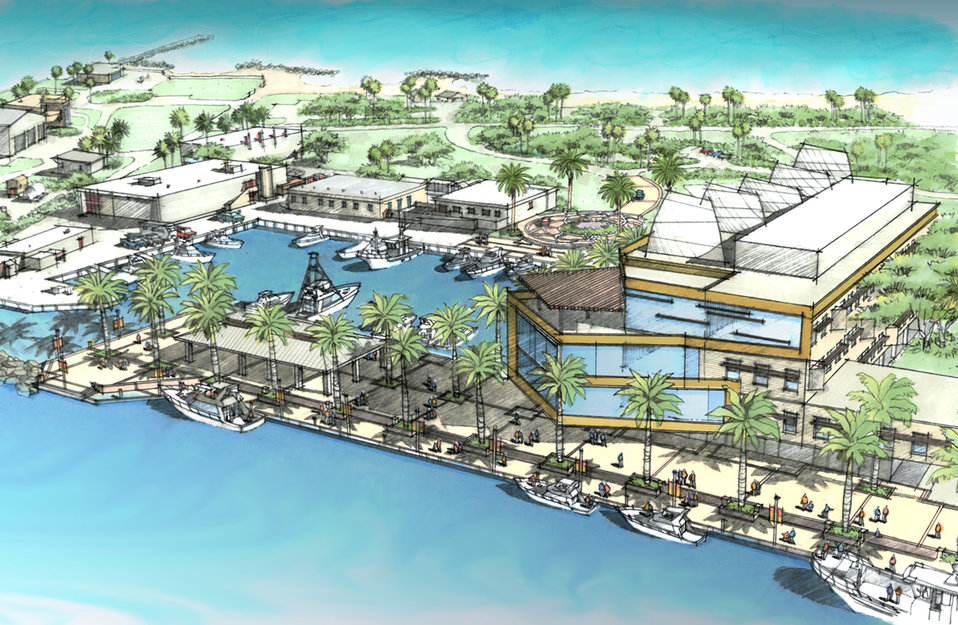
Recovery Act Grant; Nova Southeastern University

East view of the planned Center of Excellence for Coral Reef Ecosystem Science research facility at the Nova Southeastern University Oceanographic Center.

Credit: Artist's rendering courtesy NSU